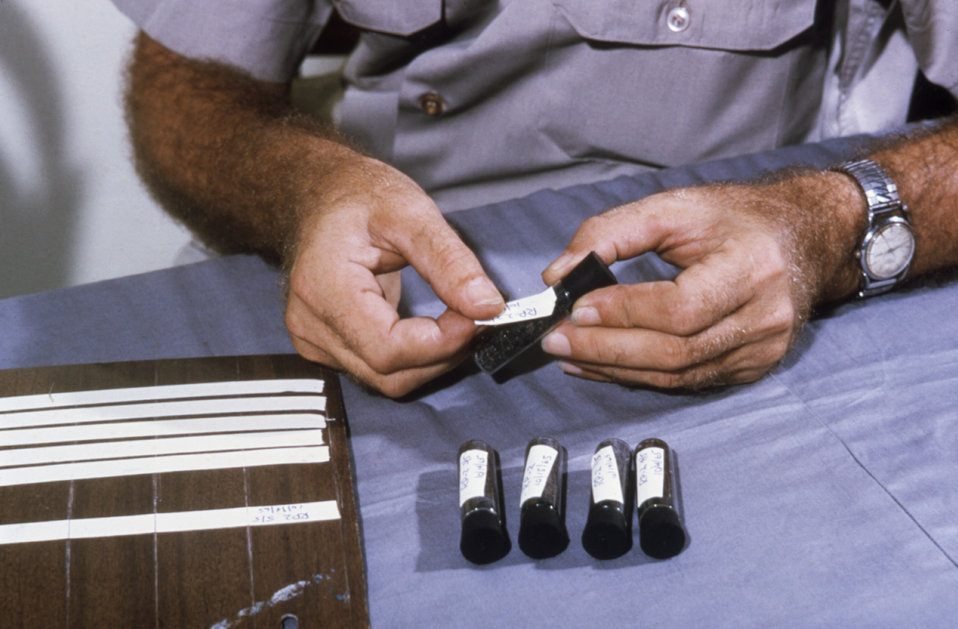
A CDC field researcher is shown here labeling glass tubes filled with mosquitoes that will be used in an arbovirus study.